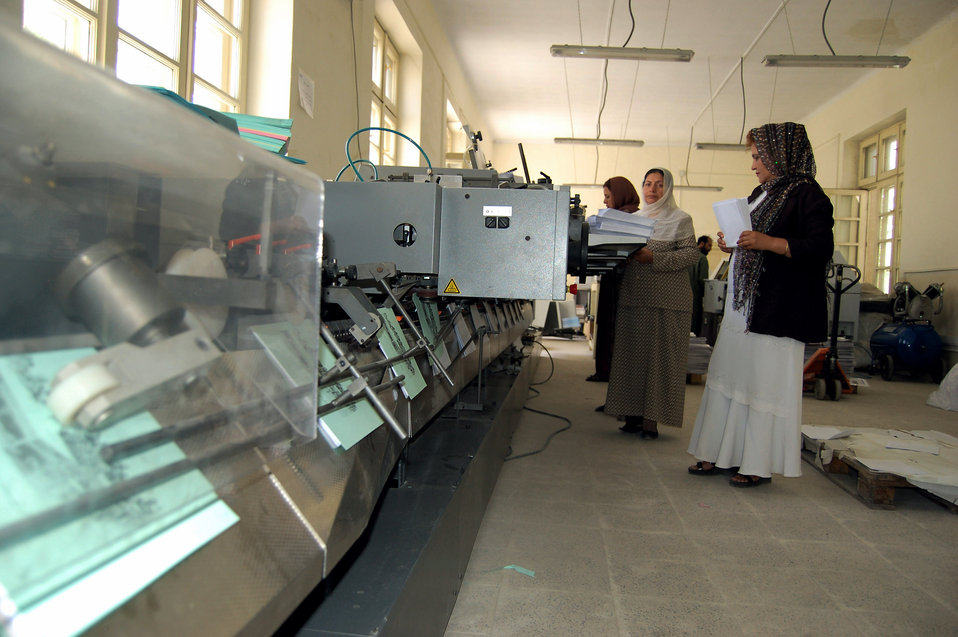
ANA print plant supports mission, training

Afghan National Army civilians load lined paper into a post-press machine at the ANA print plant in Kabul, Afghanistan. During an average week, the plant produces more than 75,000 products used by the ANA for training, recruitment and logistical support.